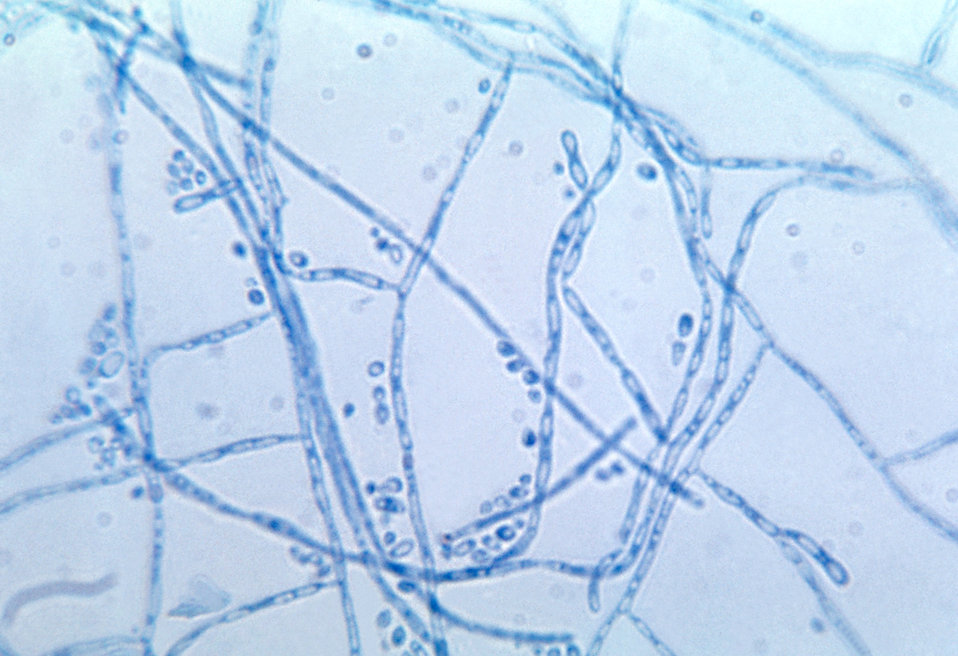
This photomicrograph depicts Cladosporium mansonii, strain A-691, taken from a slide culture.